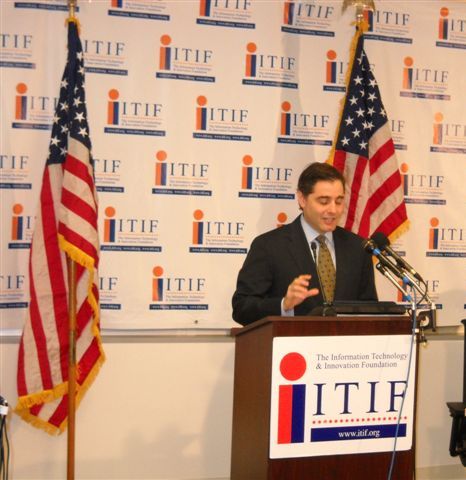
Universal Service Fund Reform at ITIF

Chairman Julius Genachowski made remarks on the urgent need for Universal Service Fund reform. February 7, 2011 at ITIF in Washington, D.C.